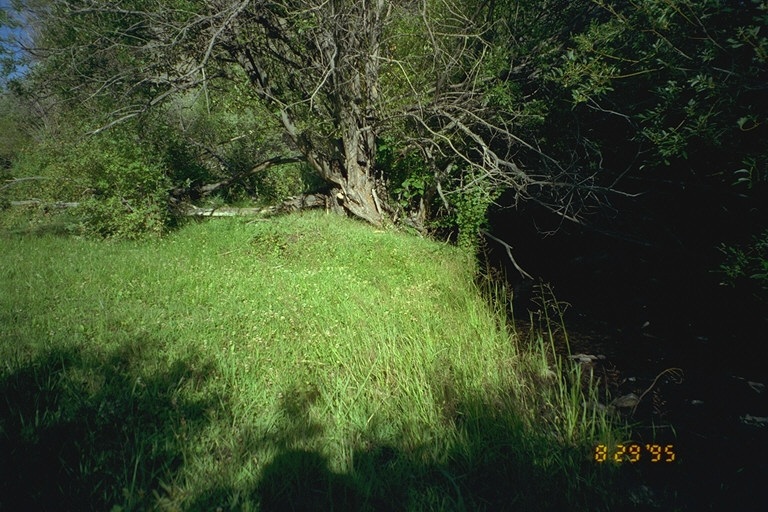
Riparian area Public Lands Salmon Field Office UCSC Upper Columbia Salmon Clearwater District